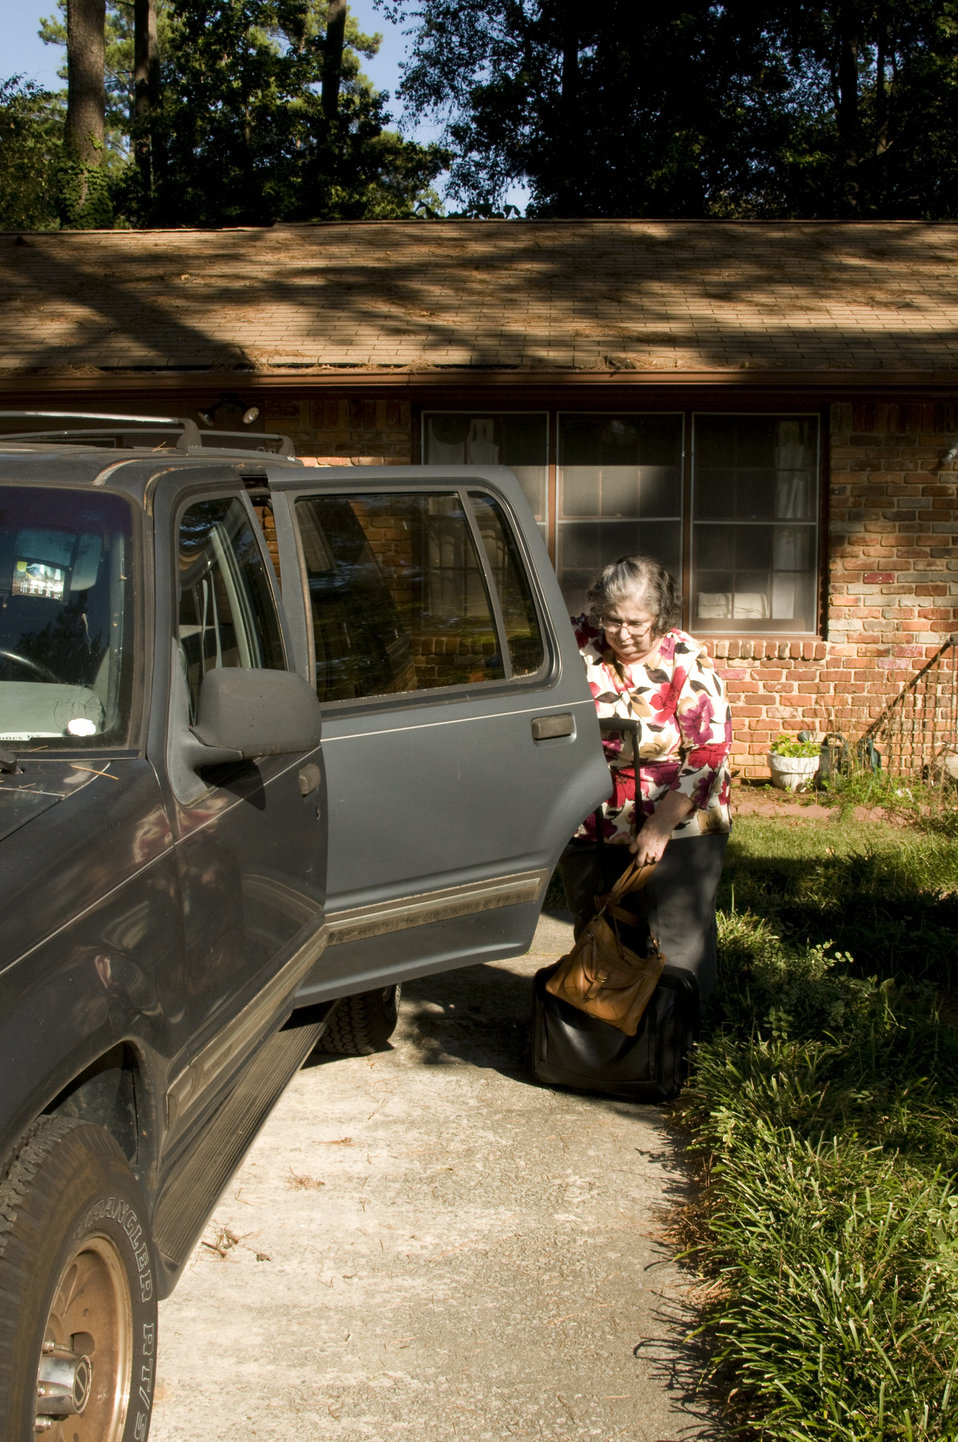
The woman pictured here is a rheumatoid arthritis patient, and was not letting her painful condition impeded her from carrying on with her daily activities, which included the use of a baggage carrier that she was using to move a small piece of luggage over to her vehicle after exiting her home. Note that in her left hand she held on to the luggage carrier and handbag, using the right to open the rear door in order to load her luggage into the back seat area.